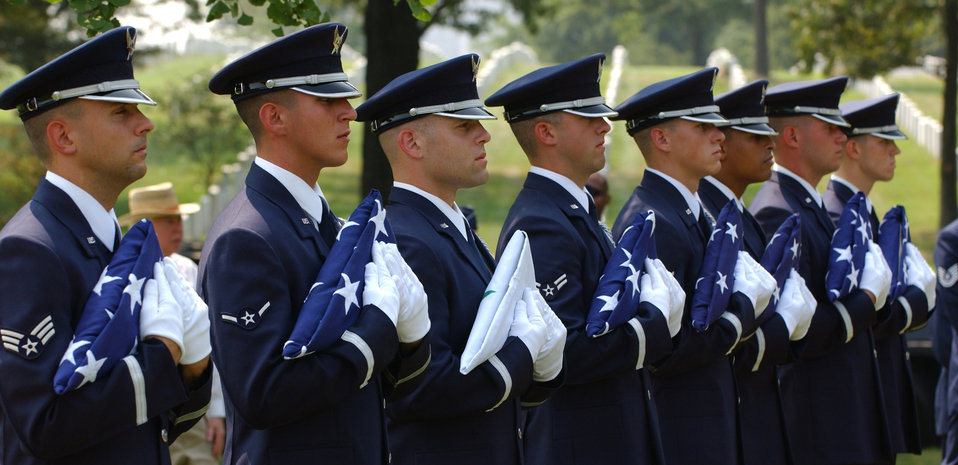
Group Burial

ARLINGTON NATIONAL CEMETERY, Va. -- Honor guard Airmen hold flags to be presented to the families of four U.S. Airmen and an Iraqi Airman who died May 30 in an aircraft accident in Iraq.